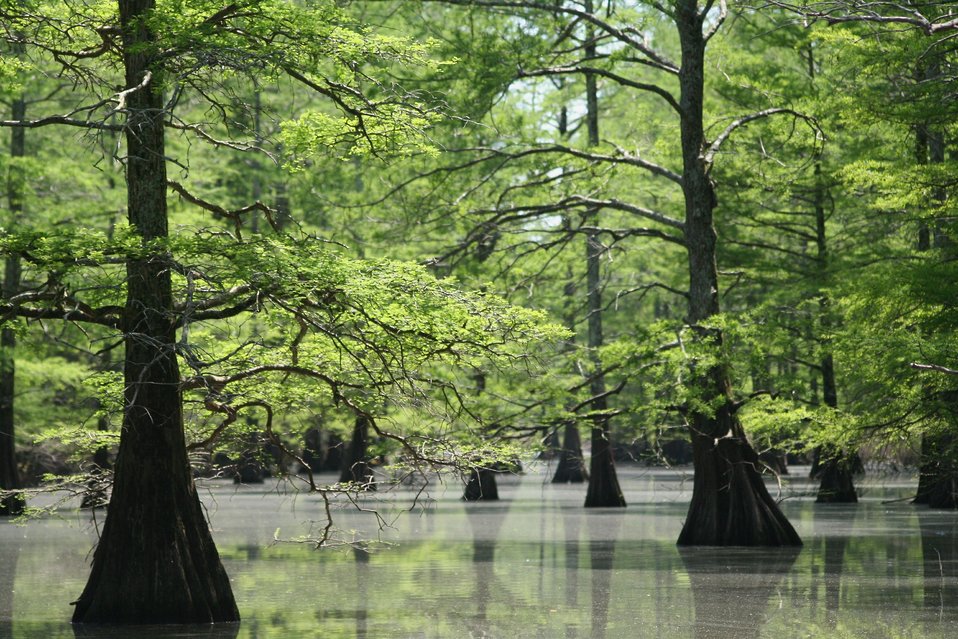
Big Lake Refuge

Big Lake National Wildlife Refuge, AR.